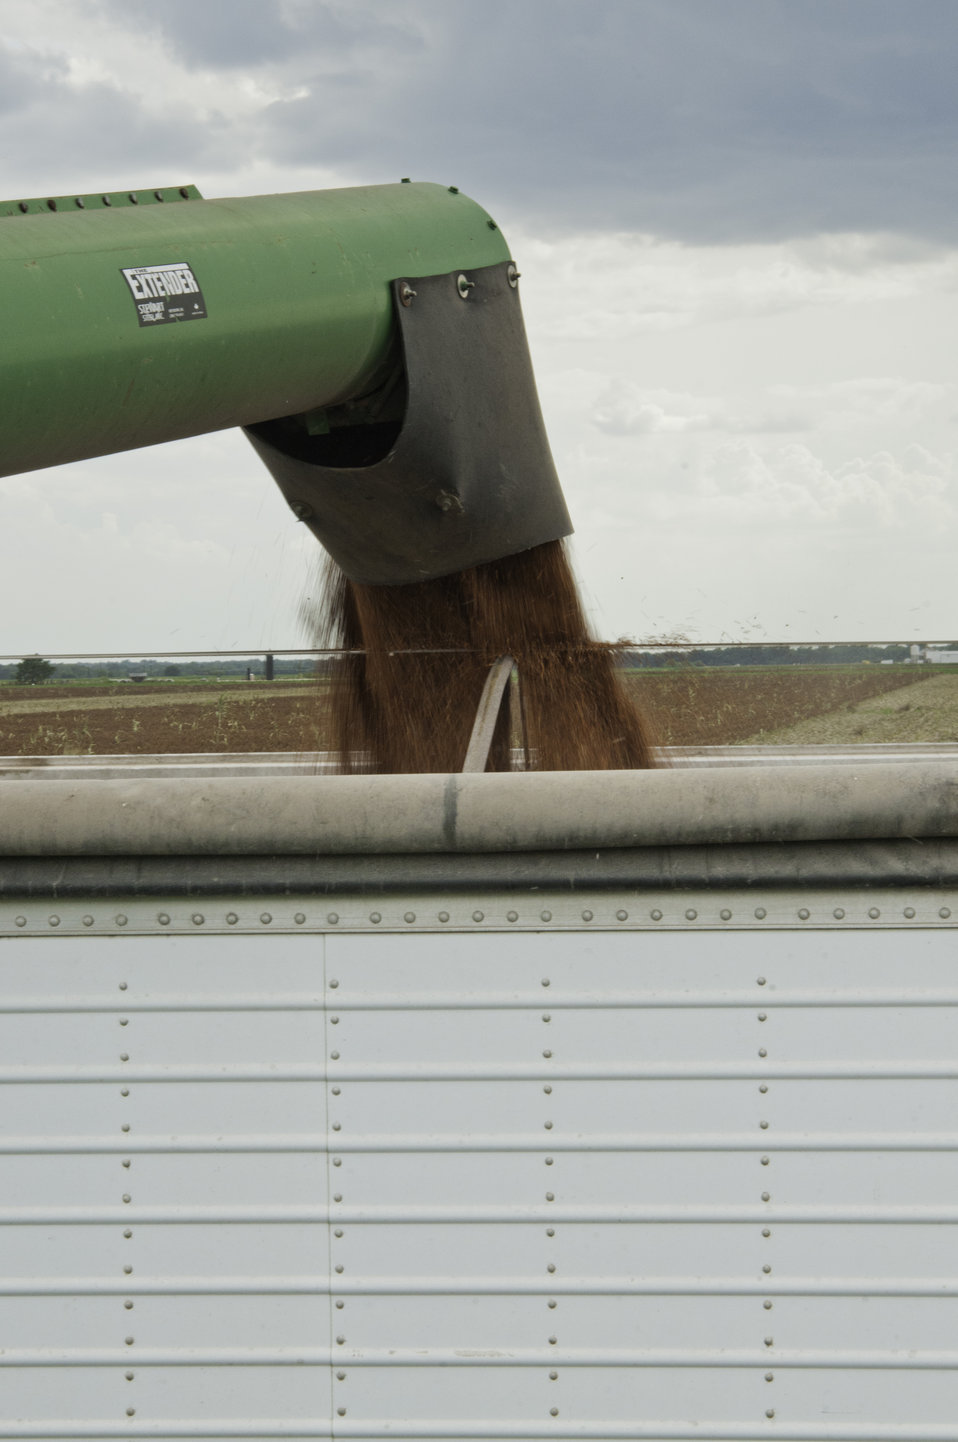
Grain sorghum is harvested on the Wilder Farms in Navasota, TX on Aug. 23, 2013.